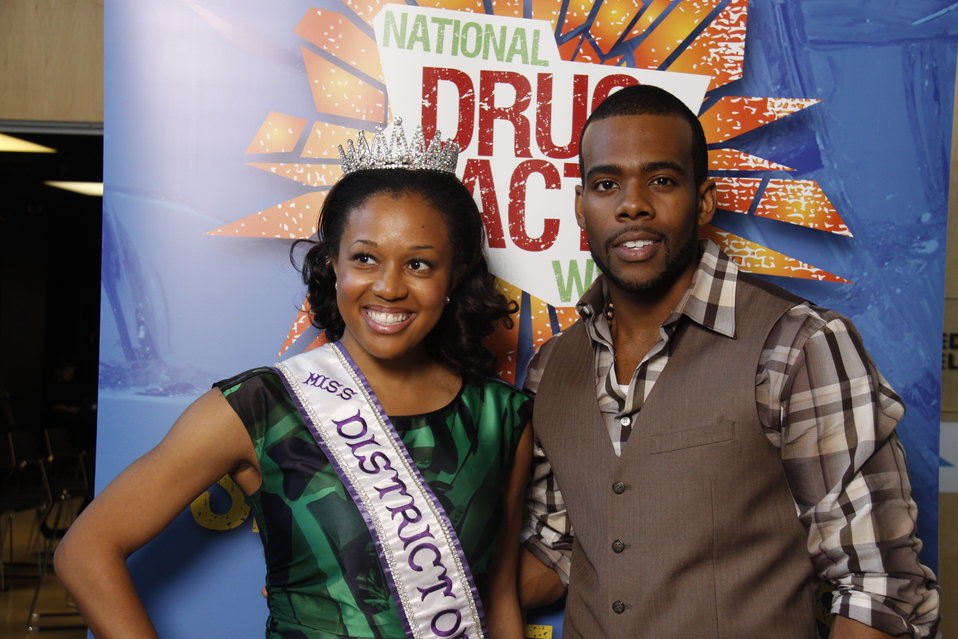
NDFW Mentor Event